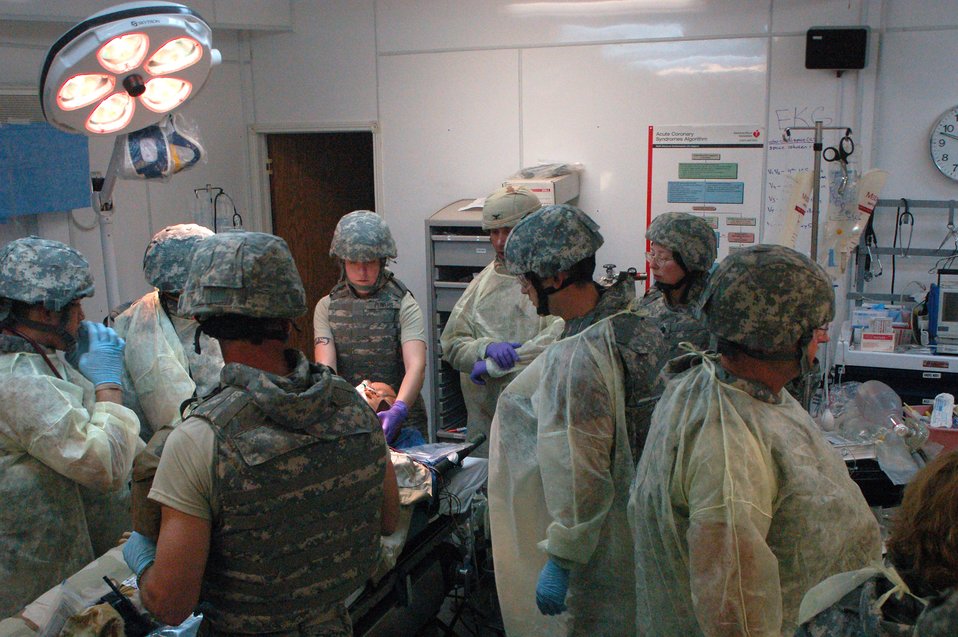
Sather medics prepare for worst

The 447th Expeditionary Medical Squadron at Sather Air Base, Iraq, is made up of only five doctors, one nurse and six medics. However, with the training the non-clinical squadron members recieved March 21, most of them are now able to assist in trauma care, which helps the core medical personnel during an emergency.